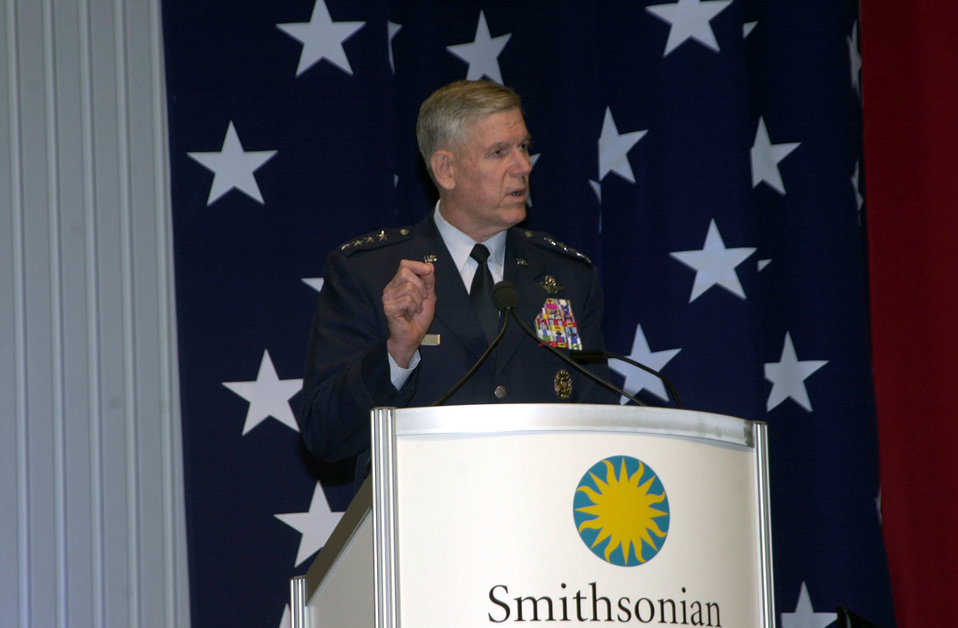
Smithsonian opens new facility

CHANTILLY, Va. -- Chairman of the Joint Chiefs of Staff Gen. Richard B. Myers addressed nearly 4,000 military aviation veterans, family members and attendees at the Salute to Military Aviation Veterans event. The salute took place at the National Air and Space Museum's new Steven F. Udvar-Hazy Center here.